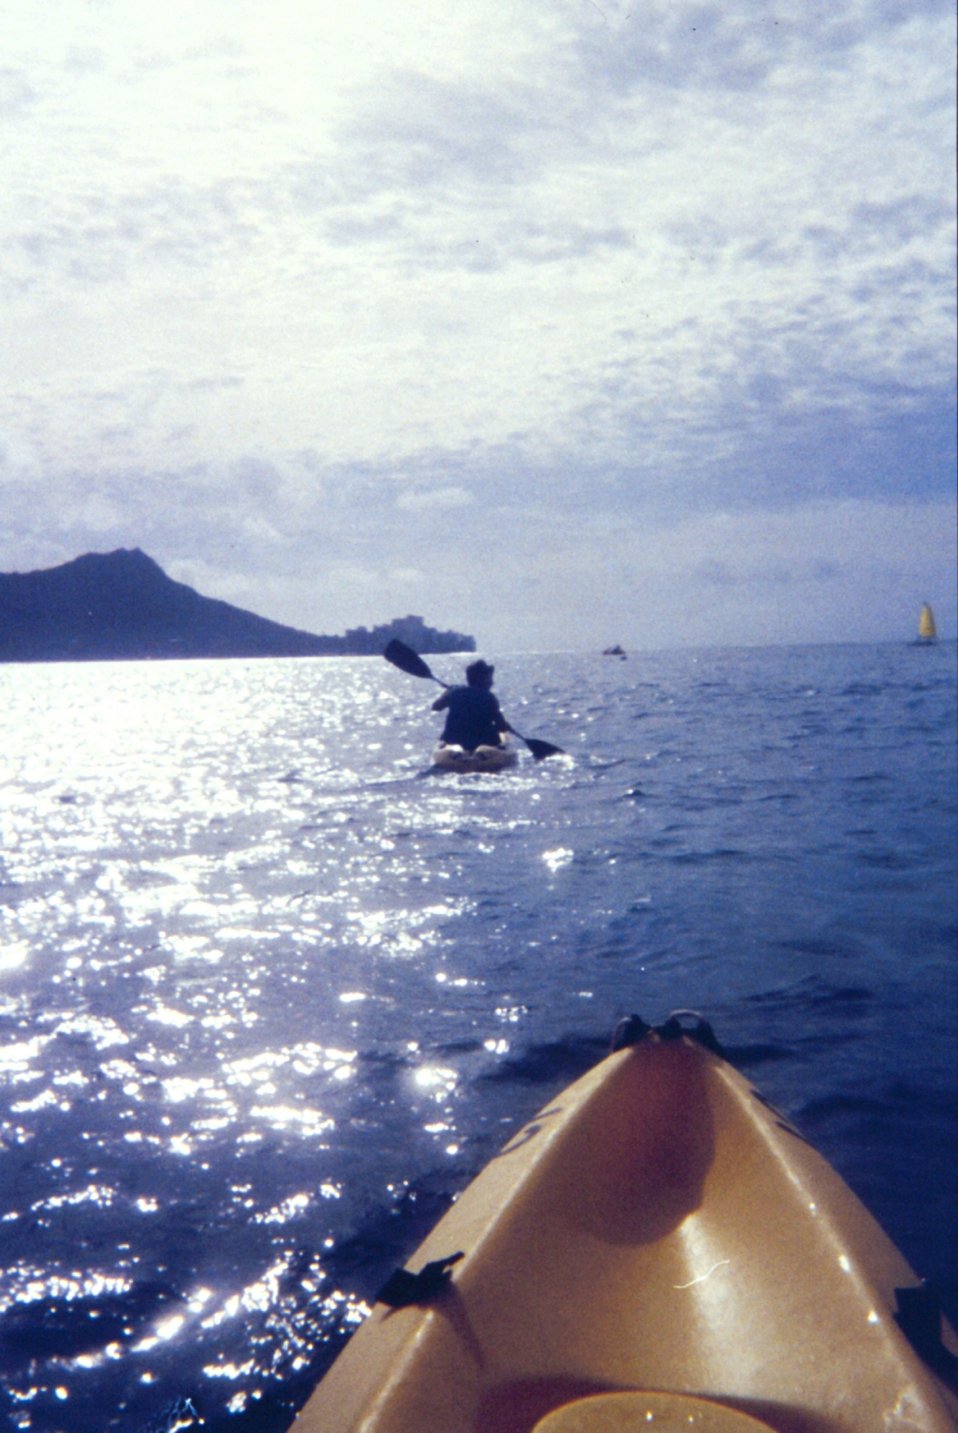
Kayaking off Waikiki with Diamondhead in the background.